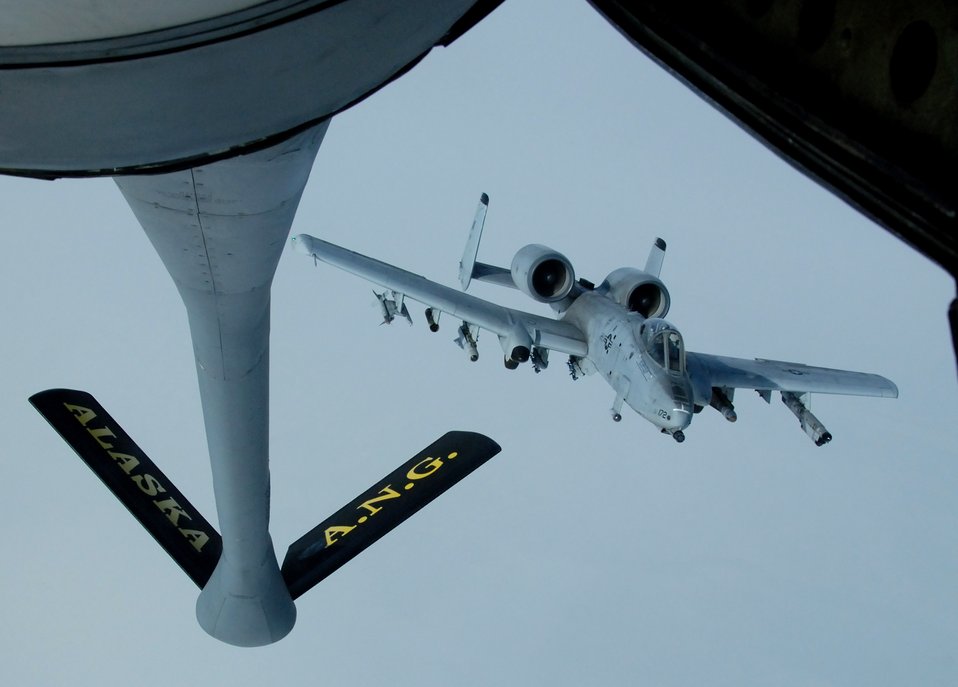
Arctic refueling

Capt. Oliver Rick positions his A-10 Thunderbolt II behind a KC-135 Stratotanker for aerial refueling April 4 over the Pacific Alaska Range Complex. The 355th Fighter Squadron provides mission ready A-10s and has a search and rescue capability for Alaska and deployed sites worldwide. Captain Rick is a 355th Fighter Squadron pilot. The KC-135 is from the 168th Air Refueling Squadron, and both aircraft are from Eielson Air Force Base, Alaska.